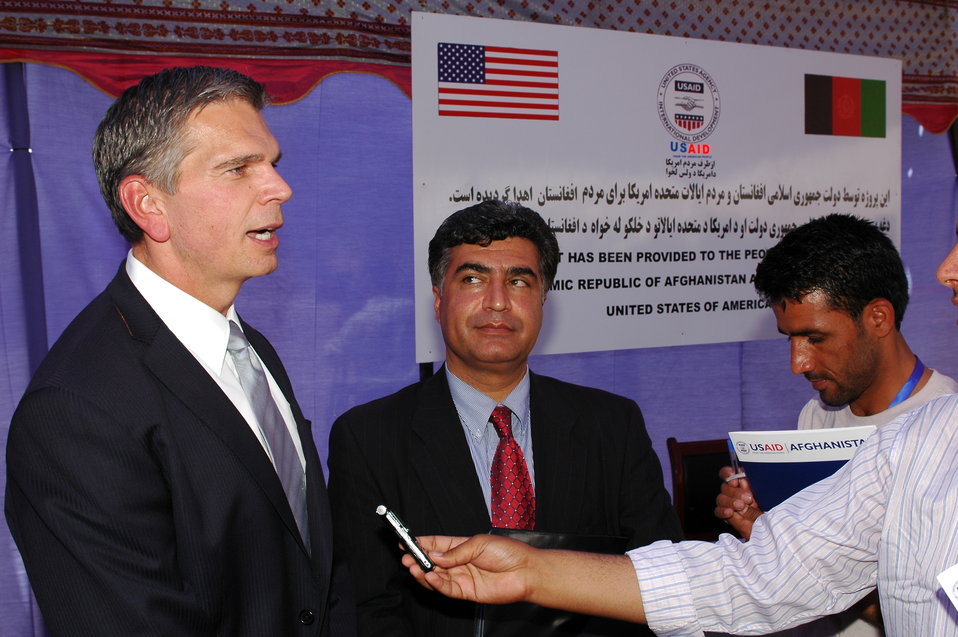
105 MW Tarakhil Power Plant Handover